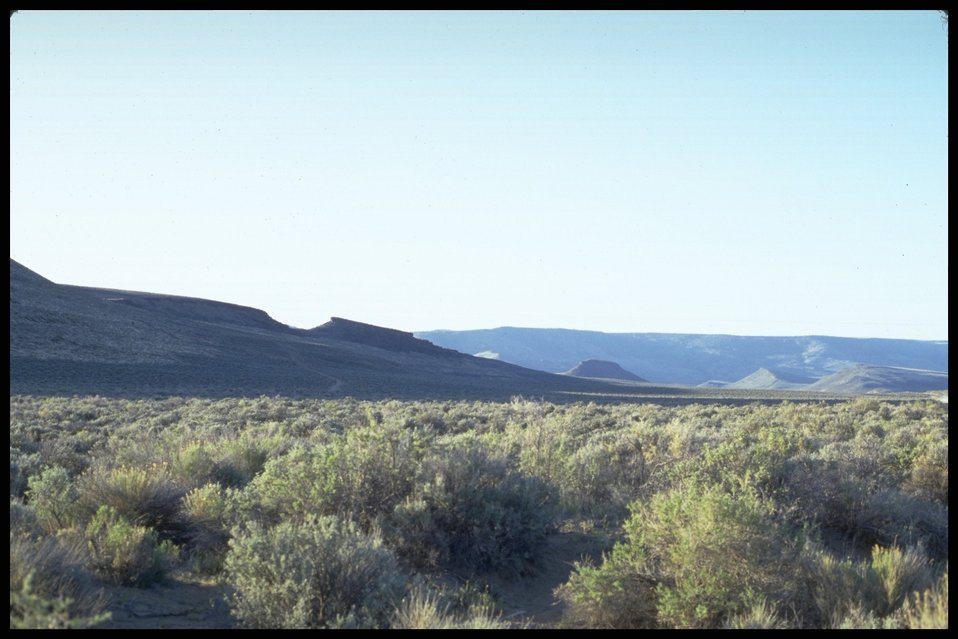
Doherty Area, Lakeview District.